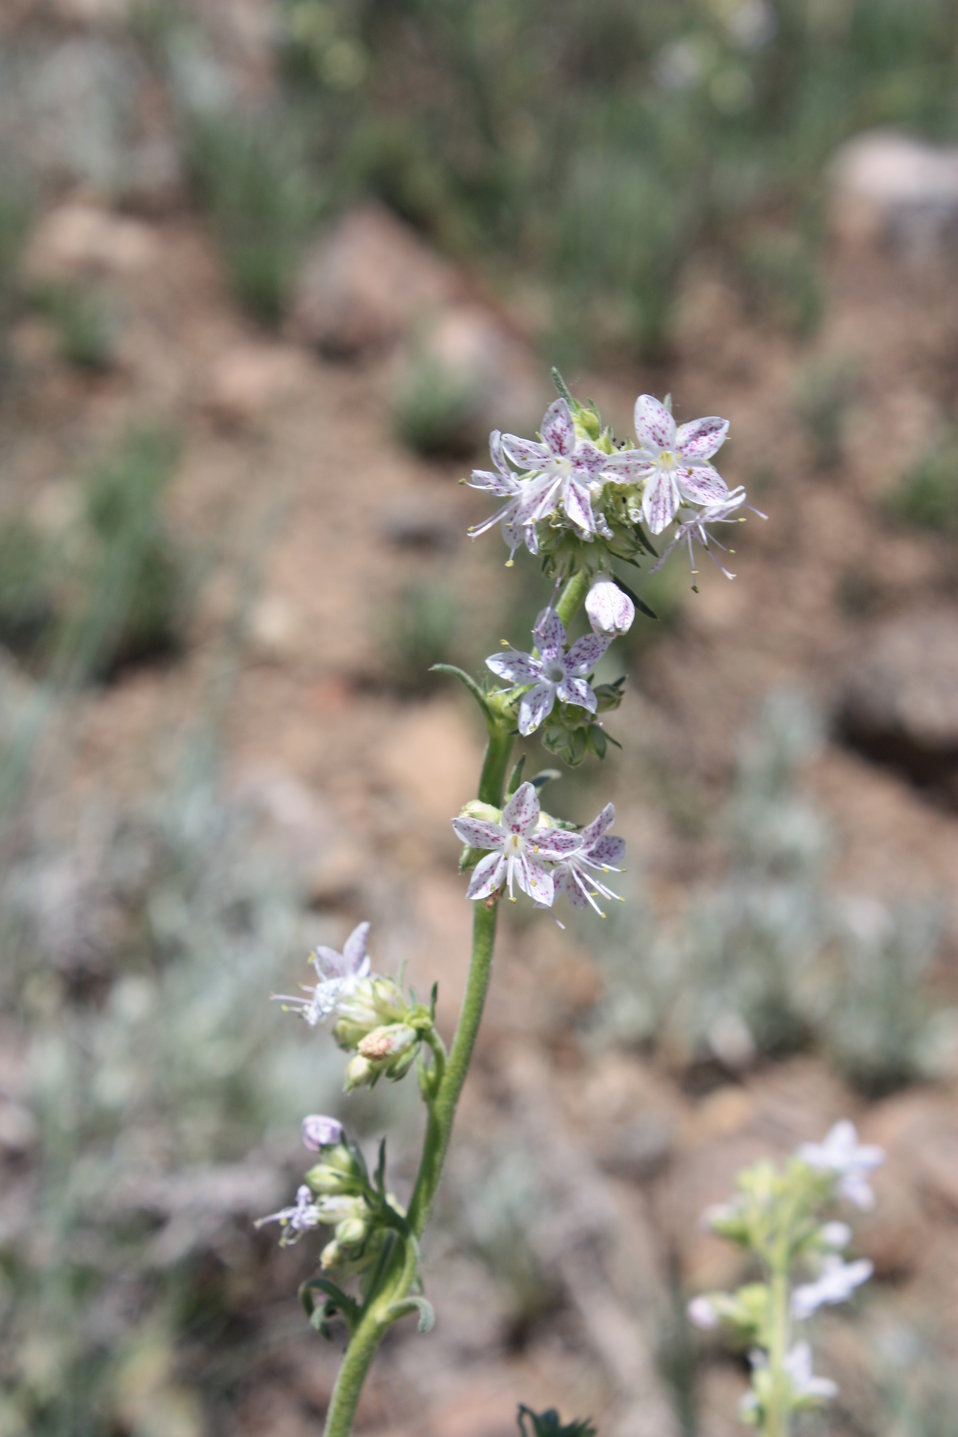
Pagosa Skyrocket

The Pagosa skyrocket’s dense clusters of white colored flowers with pink or purple spots make it an appealing flower for humans and pollinators alike.

Photo credit: USFWS
...........................................................................

BACKGROUND:
Pagosa skyrocket (Ipomopsis polyantha) is an extremely rare plant endemic to two populations on Mancos shale outcrops in and around the Town of Pagosa Springs in Archuleta County, Colorado. This member of the phlox family (Polemoniaceae) grows as a rosette for one to many years; then flowers, produces seeds, and dies in its final year of life. In June and July when the species is flowering, numerous bees and other insects can be seen visiting its clusters of white flowers with small purple spots. These pollinators are essential to the survival of the species and are comprised primarily of native ground-dwelling solitary bees. Pagosa skyrocket habitat is unique, being comprised of barren shales where conditions are harsh and difficult for growth.

The species was discovered in 1899 by Charles Fuller Baker, an American naturalist, and described as a new species in 1904 by the well-known botanist Axel Rydberg. No comprehensive surveys were conducted until the mid-1980s, when it became a candidate for listing under the Endangered Species Act. Today the Pagosa skyrocket is threatened by commercial, residential, and agricultural property development; the associated new utility installations and access roads; and from the potential effects of climate change. Because of Pagosa skyrocket’s limited range, the fact that there are only two populations, its small population size, and numerous threats to the species, it was proposed for Endangered Species Act protection in 2010. A final listing is expected in 2011.

Eighty-eight percent of the areas where Pagosa skyrocket are found are private lands. The Endangered Species Act does not protect plants on private lands and therefore, all conservation actions on private land are voluntary. Funding is available to landowners wanting to conserve the species. Please contact Gina Glenne or Ellen Mayo at 970-243-2778 for further information on this species and ways that you can help with conservation and recovery.